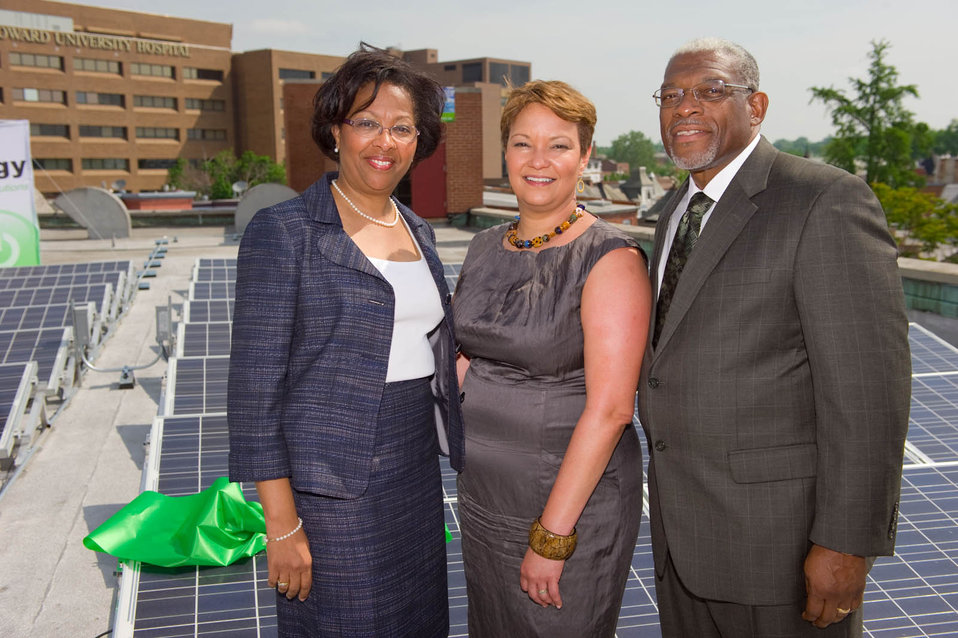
2011-05-03 FlaAveSolar 027